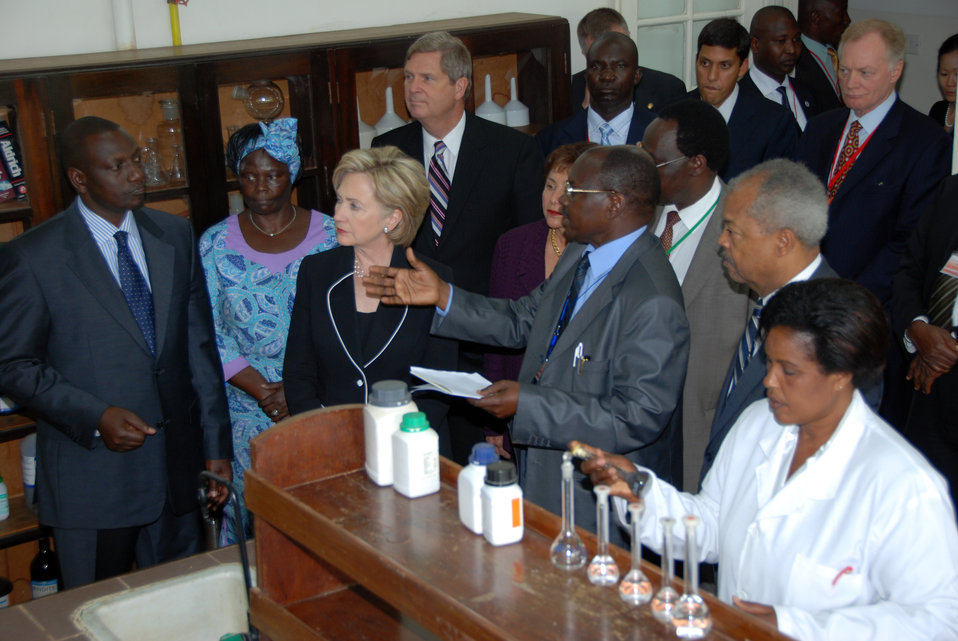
Secretary Clinton Visits Kenyan Agricultural Research Institute

U.S. Secretary of State Hillary Rodham Clinton tours a laboratory at the Kenyan Agricultural Research Institute (KARI) with KARI Director Dr. Ephraim Mukisira near Nairobi, Kenya August 5, 2009.